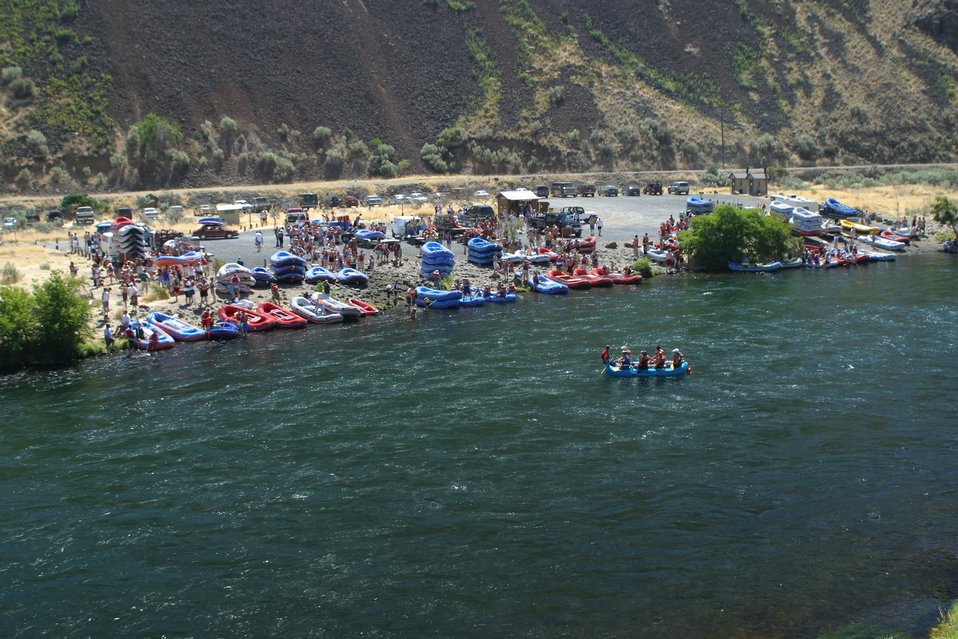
Over 200,000 people a year float the Lower Deshutes River.